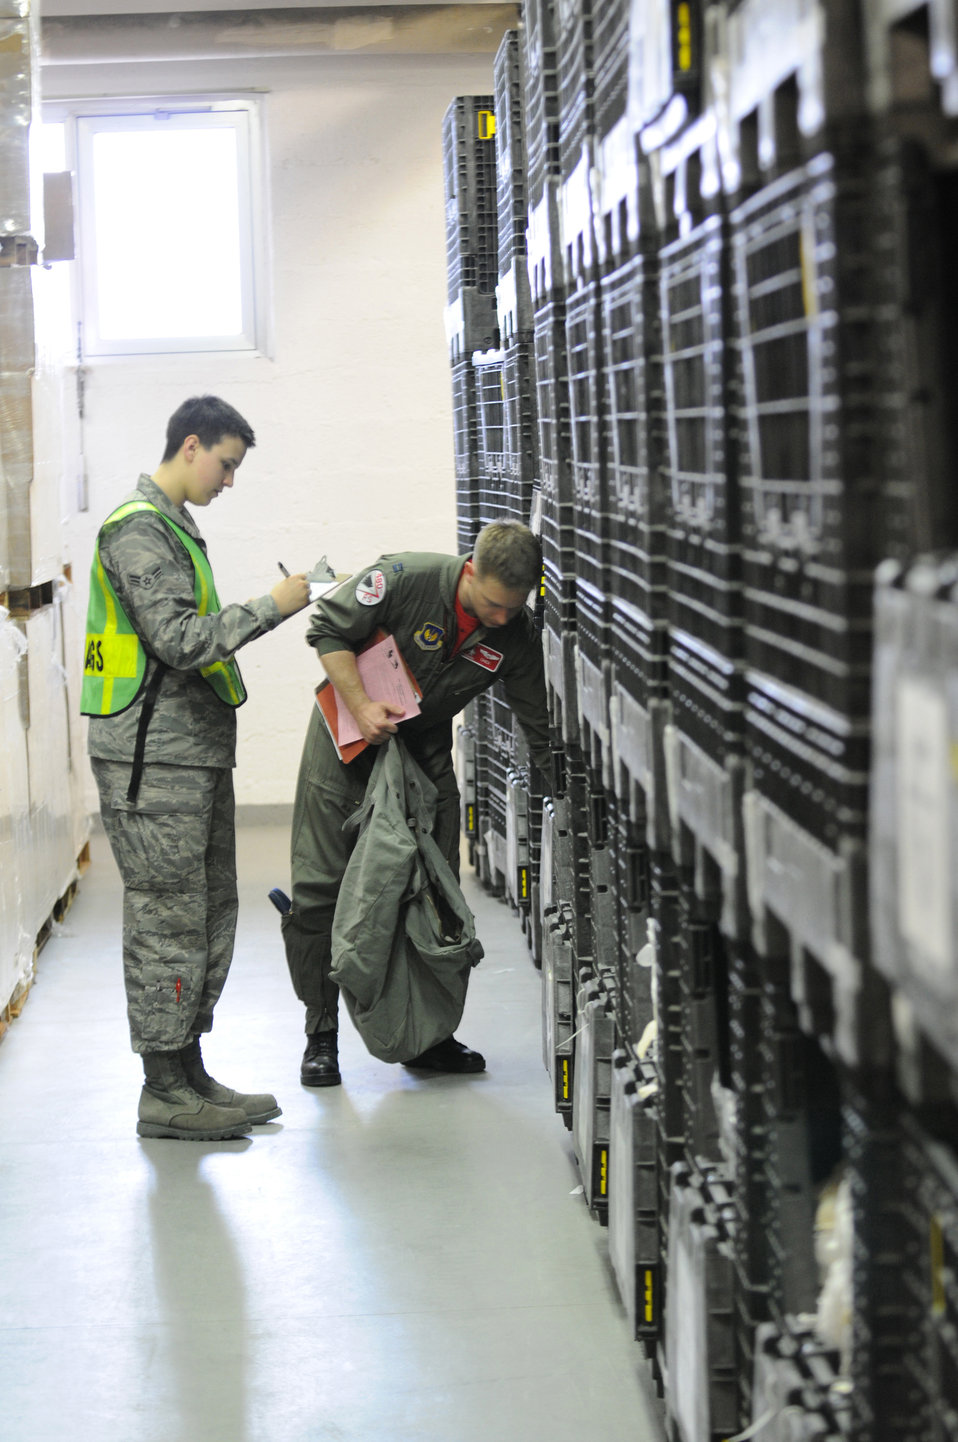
Operation Odyssey Dawn

SPANGDAHLEM AIR BASE, Germany - A52nd Logistics Readiness Squadron mobility apprentice issues a 480th Fighter Squadron fighter pilot his chemical gear here March 18 during a personnel deployment function in support of Operation Odyssey Dawn March 18. Joint Task Force Odyssey Dawn is the U.S. Africa Command task force established to provide operational and tactical command and control of U.S. military forces supporting the international response to the unrest in Libya and enforcement of United Nations Security Council Resolution (UNSCR) 1973. UNSCR 1973 authorizes all necessary measures to protect civilians in Libya under threat of attack by Qadhafi regime forces. JTF Odyssey Dawn is commanded by U.S. Navy Admiral Samuel J. Locklear, III.